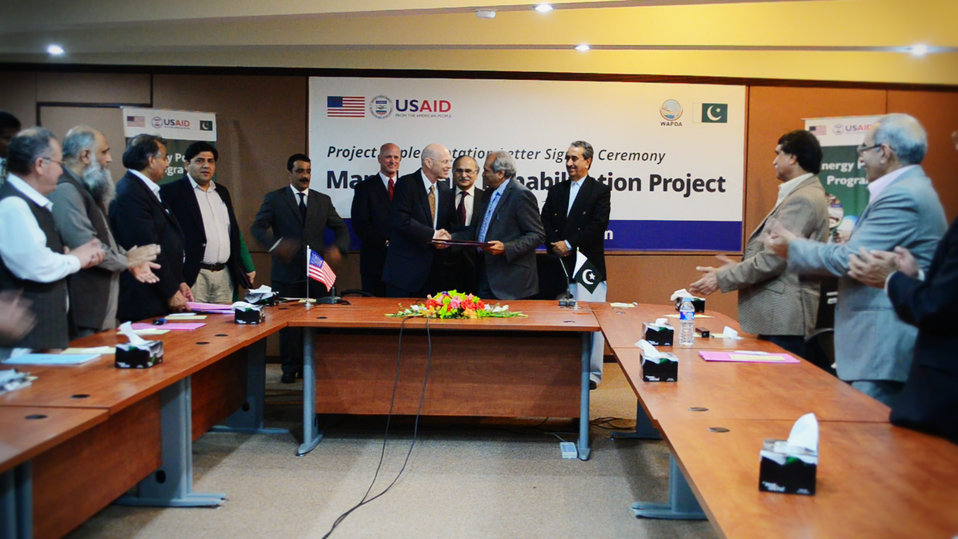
Exchange of signed agreement